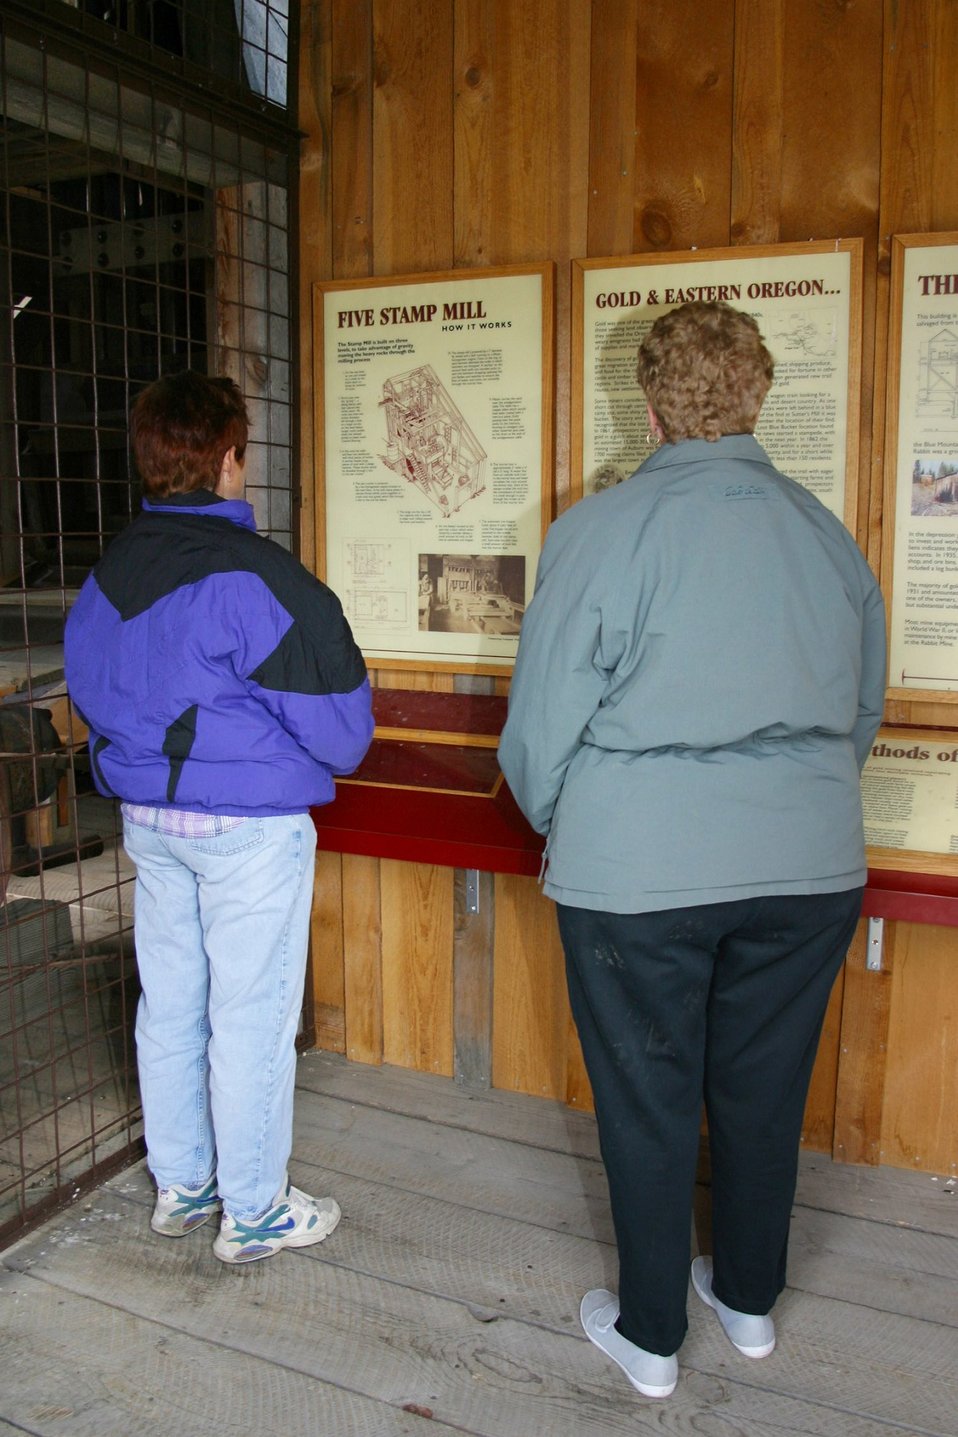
A replica of the Rabbit Mine 1926 stamp mill near Greenhorn in the Blue Mountains of eastern Oregon. It is used to interpret the importance of mining in western history, and the relationship of gold mining to the westward migration story.